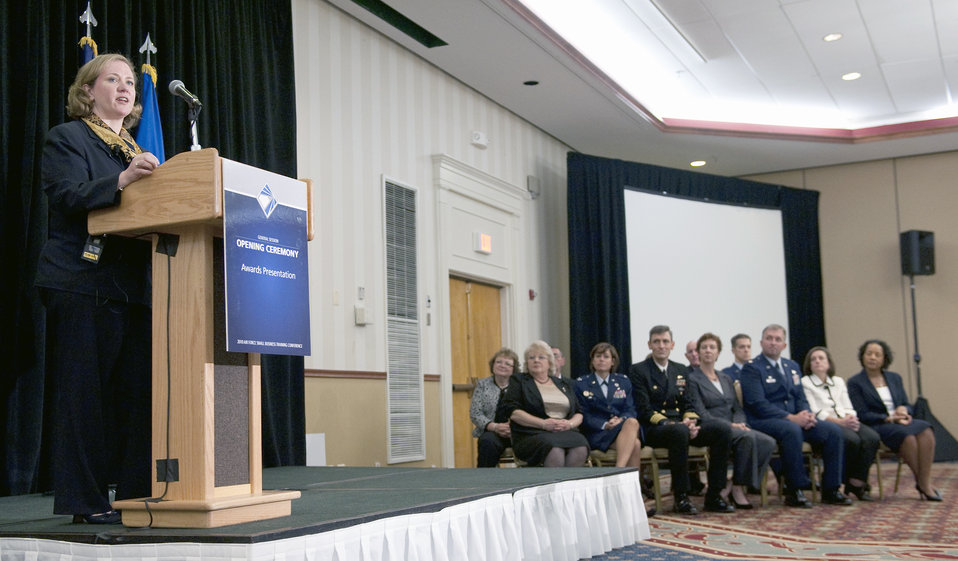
Air Force Small Business Fall Training Conference

Undersecretary of the Air Force Erin C. Conaton presents awards during the Air Force Small Business Fall Training Conference Nov. 15, 2010, in Arlington, Va.